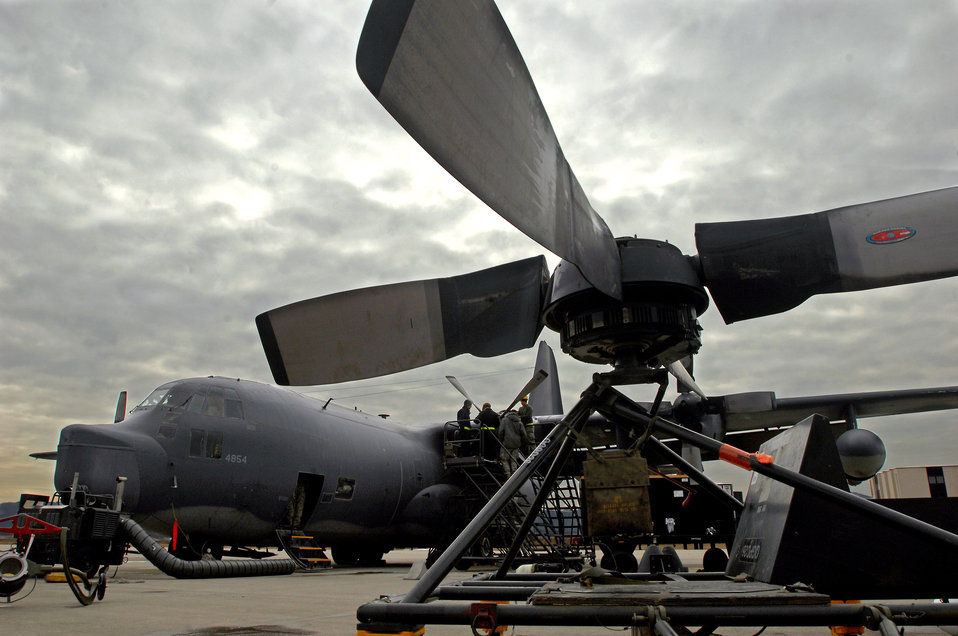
A shiny new propeller

Airmen with the 86th Maintenance Squadron prepare an MC-130 Combat Shadow for a new propeller Feb. 19 at Ramstein Air Base, Germany. The MC-130 was flown to the base for maintenance. After the repairs are made the aircraft will return to the area of operation.